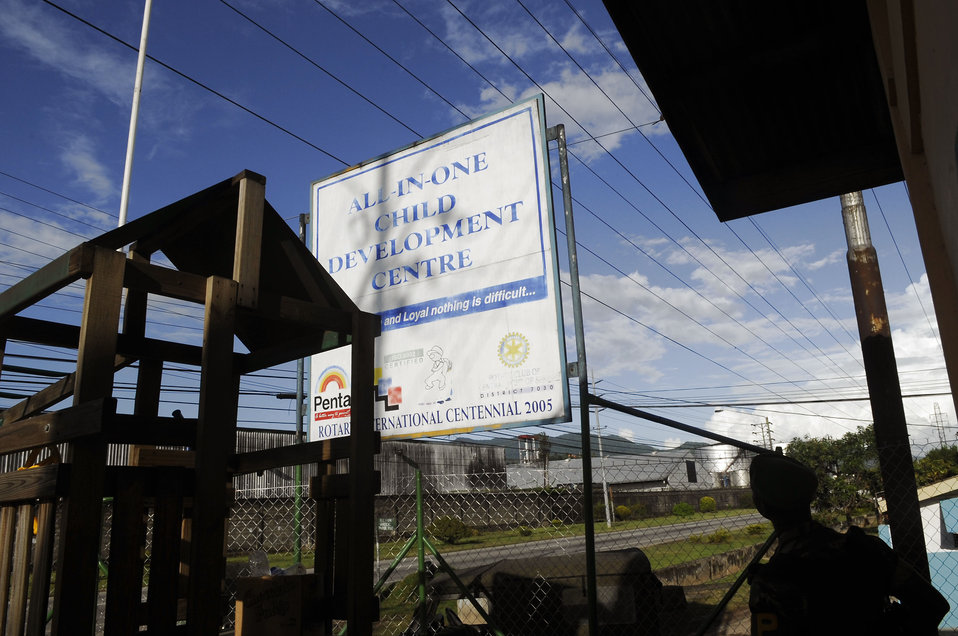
American servicemembers continue to provide promise

Airman and Sailors are refurbishing the All-in-One Development Center in support of Operation Continuing Promise 2008 Nov. 4 in Tunapuna, Trinidad and Tobago.